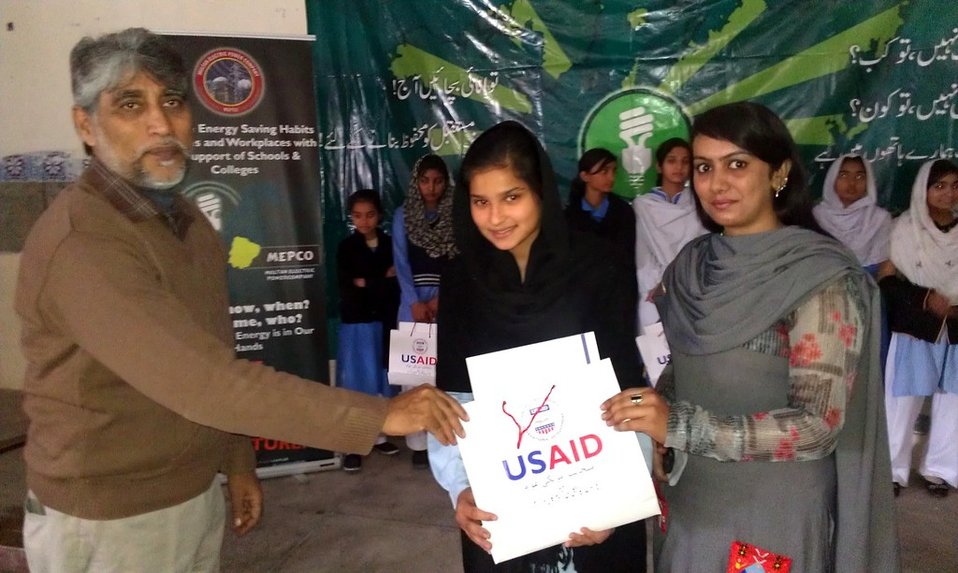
USAID Power Distribution Program-Energy Conservation Seminar at Govt. Comprehensive Girls Higher Secondary School, Multan.

During the seminar at Govt. Comprehensive Girls Higher Secondary School,Multan, Khawaja Aurangzaib (Additional Director Procurement,MEPCO) & Miss Irum Samreen(Computer assistant, MEPCO),distributing the goody bag to the winners of quiz session.